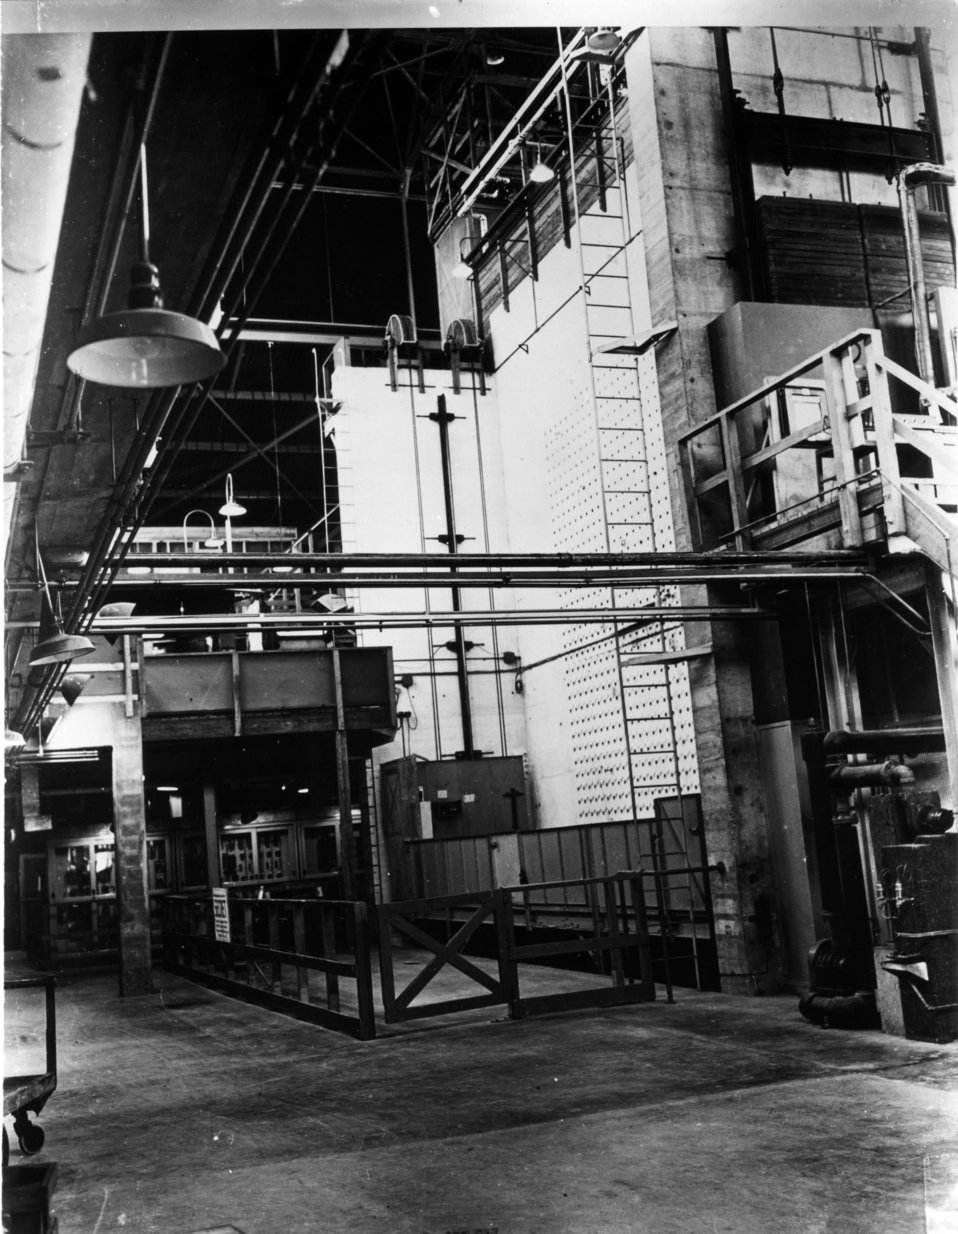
X-10 at Oak Ridge